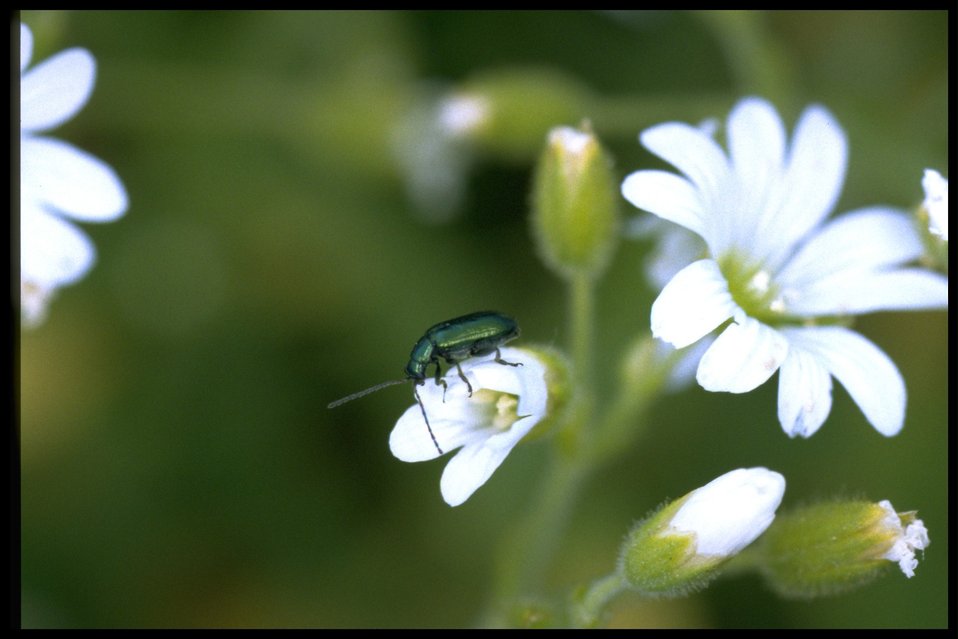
Closeup shot of wildflower (Cerastium).